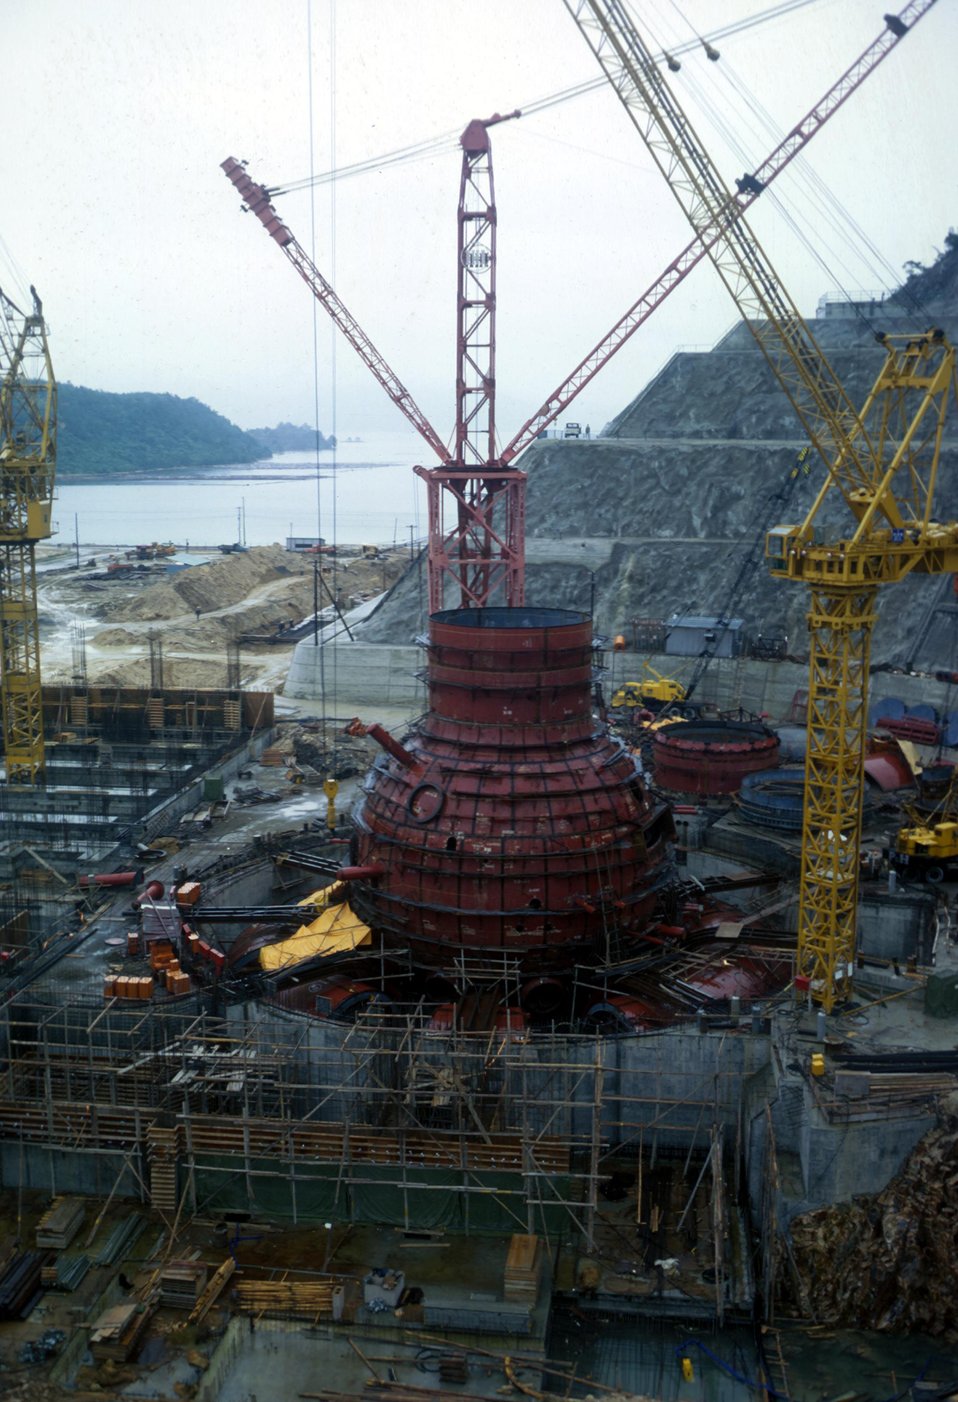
Construction of Japan Atomic Power Co. #2 Power Reactor at Tsuruga, Japan. c. 1967